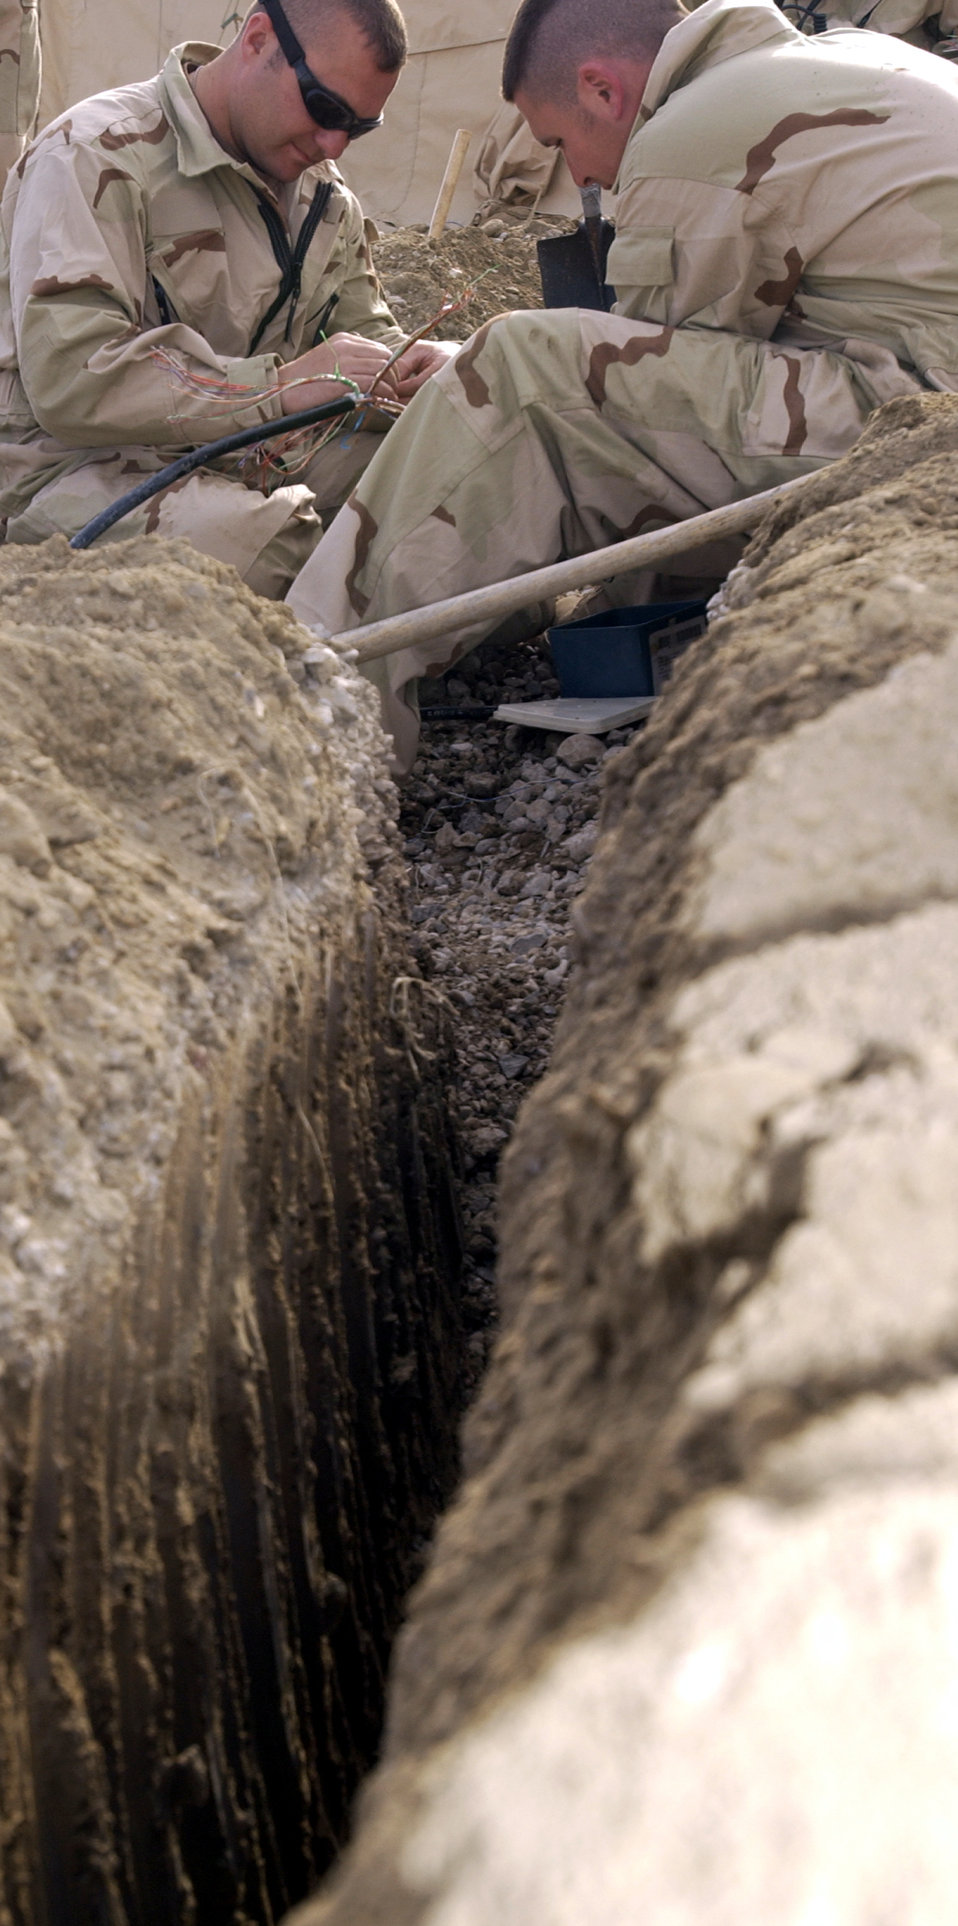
Trench wire

TALLIL AIR BASE, Iraq -- Two members the 407th Expeditionary Communication Squadron repair wires cut April 9 while digging a trench to run communications wire through the base here.